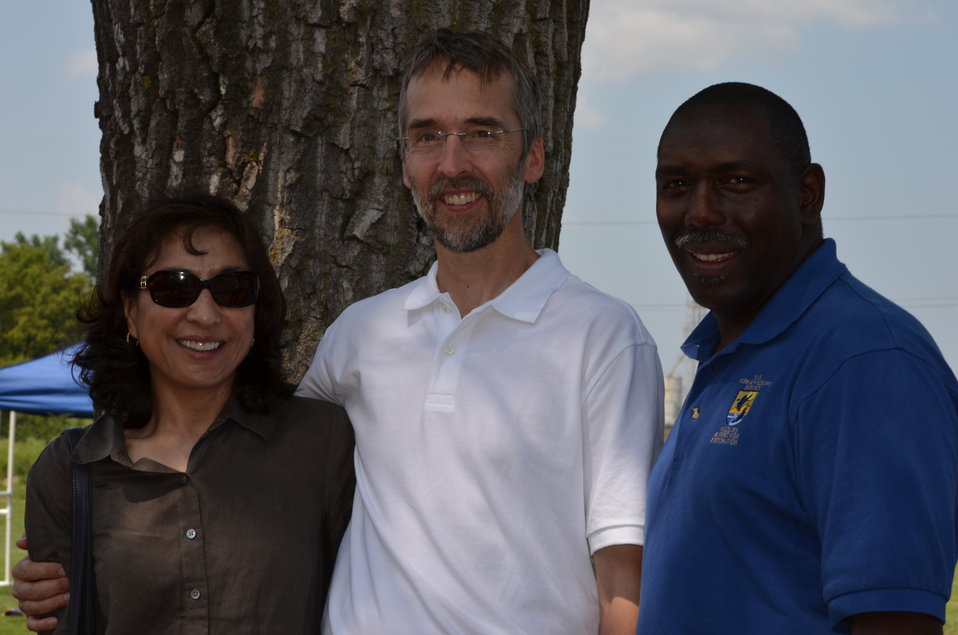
Joe Hautman (center) and wife with Jerome Ford (right), AD Migratory Birds.